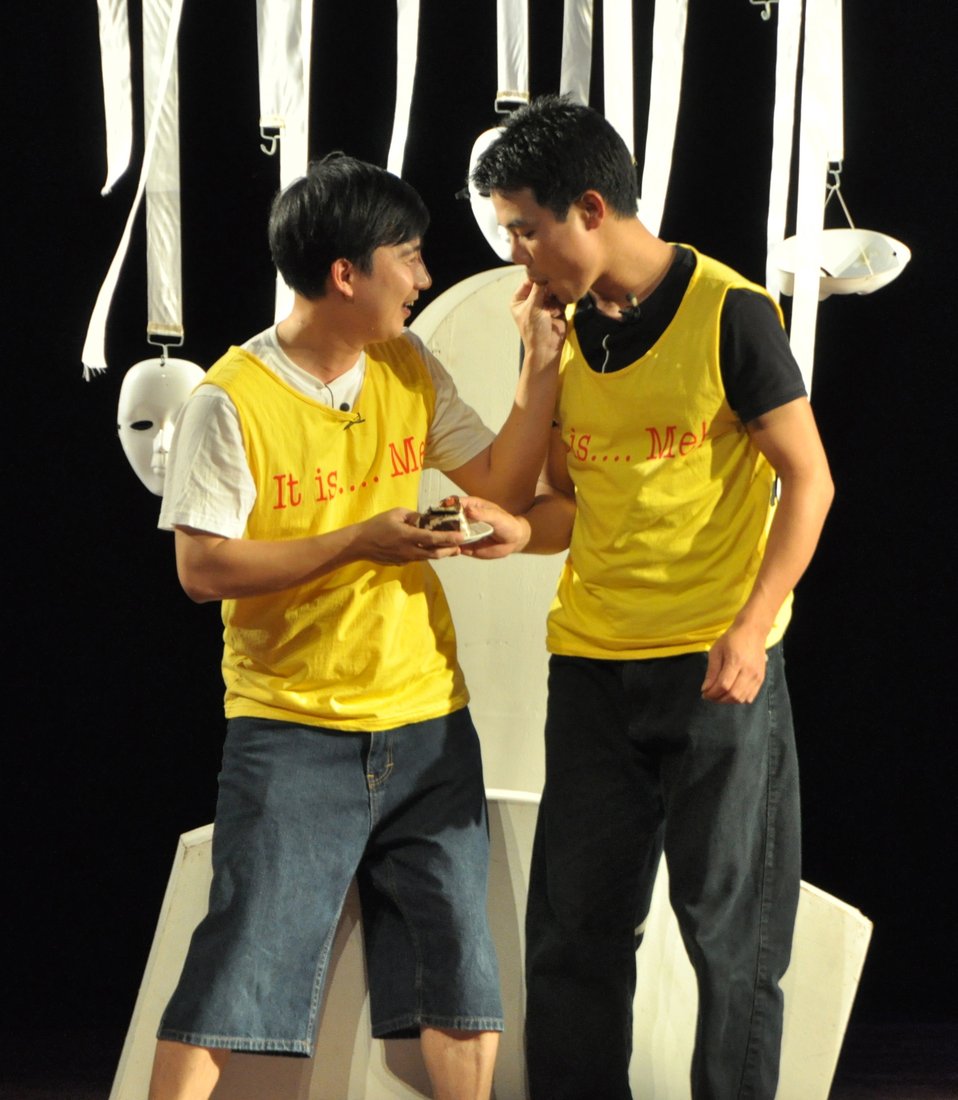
PEPFAR Musical Questions and Exclamations

Hanoi, May 17, 2013